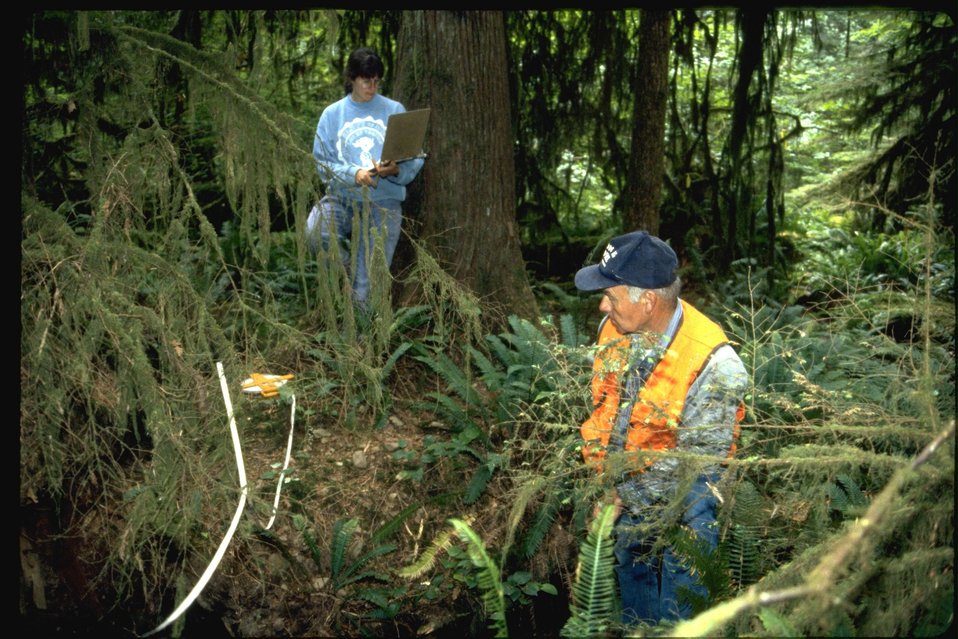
Ted and Wendy doing timber volume measurements in the forest.